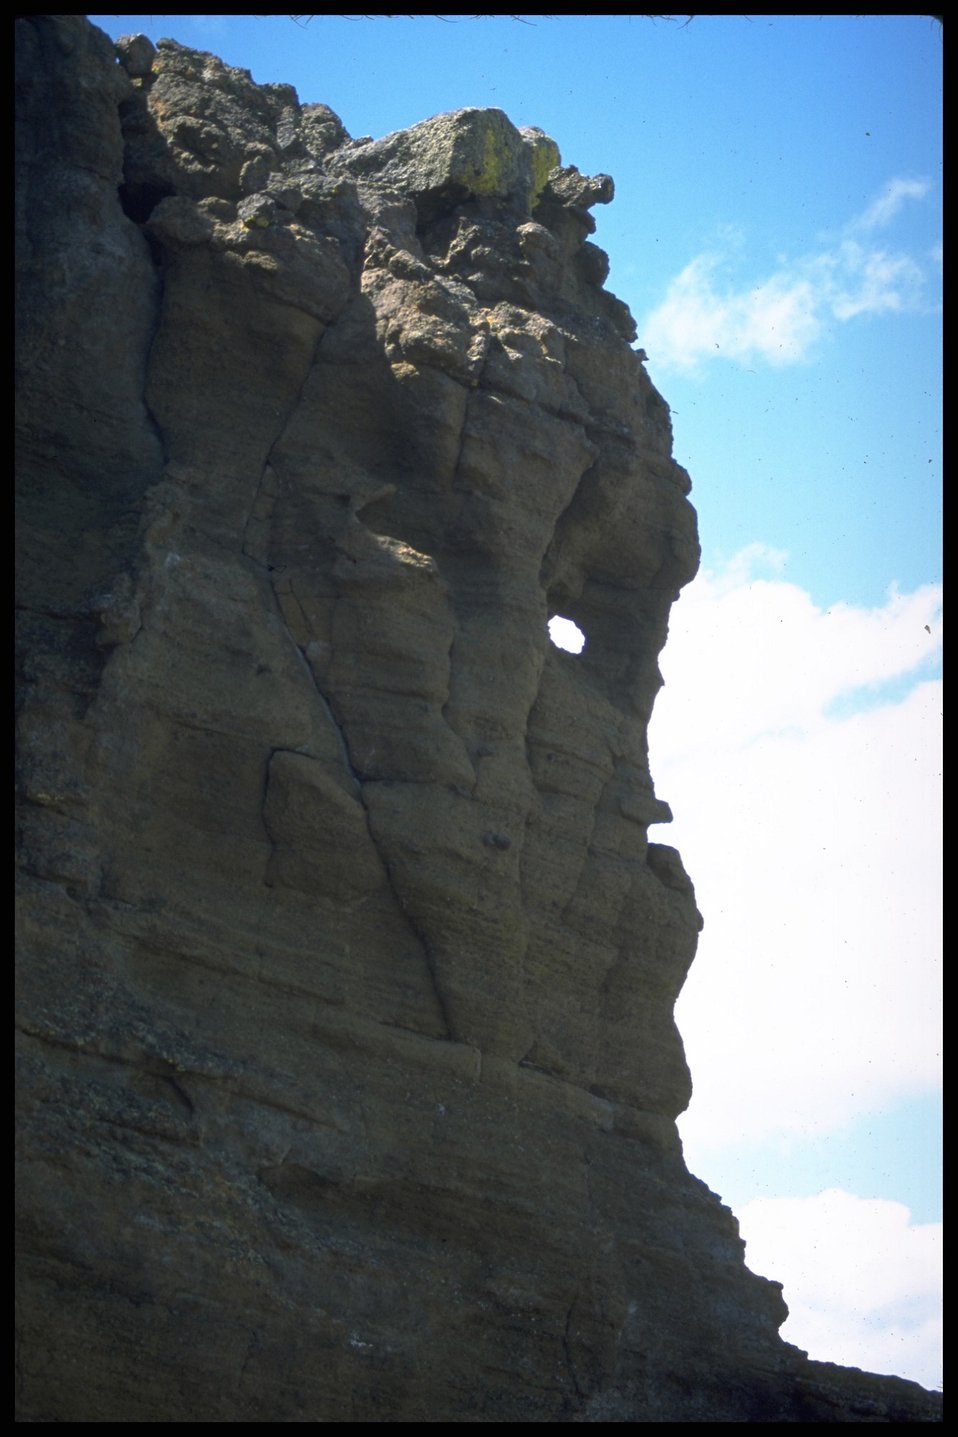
Scenic view of Ft. Rock, Lakeview District.